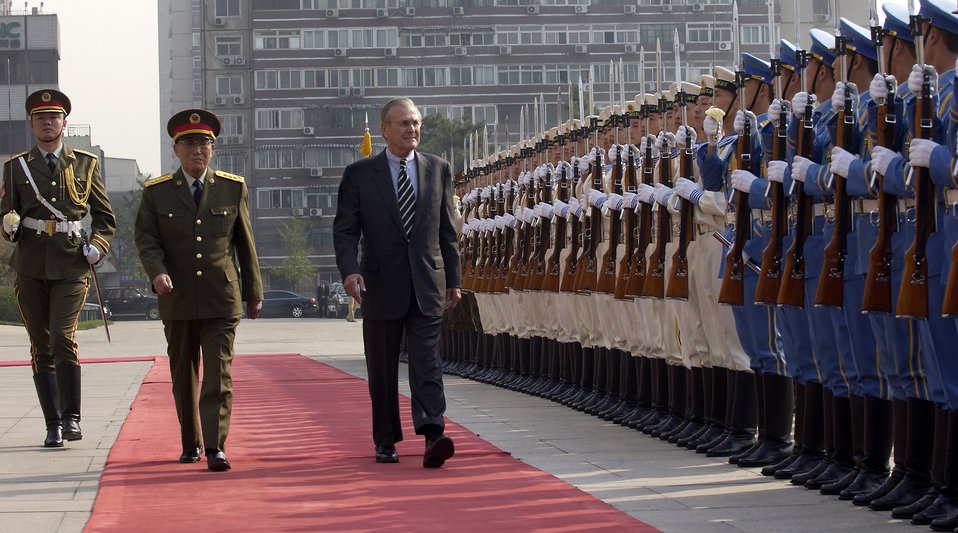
East meets West

BEIJING -- Secretary of Defense Donald H. Rumsfeld and Gen. Cao Gangchuan, vice chairman of the central military committee, and China's minister of defense, do a pass and review of military members at the Bayi Building here. Secretary Rumsfeld traveled to China Oct. 19 to meet with military and civilian leaders and discuss U.S.-China defense relationships and cooperation in areas of common interest.